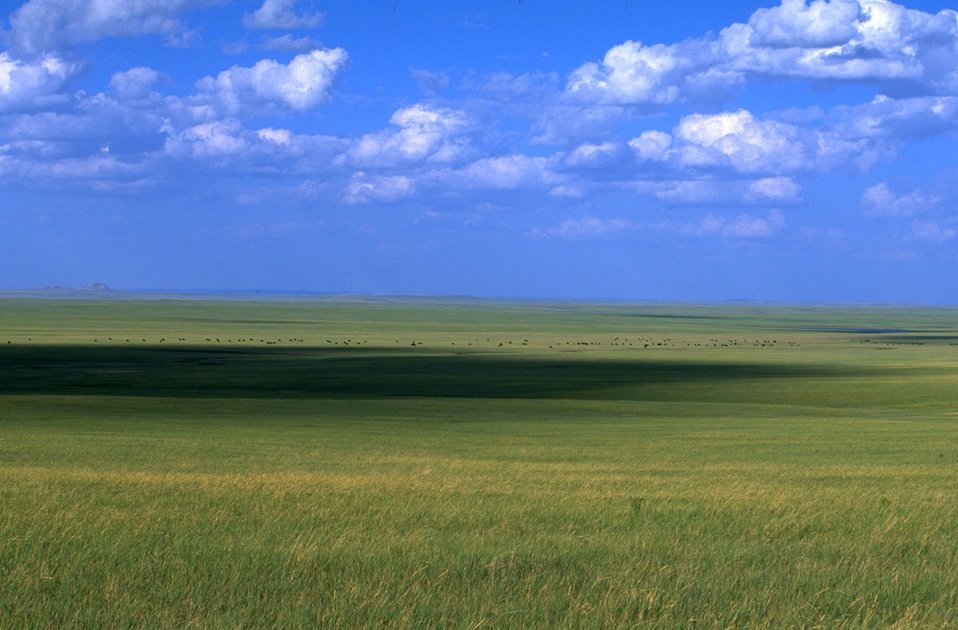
Grassland Vista 35 miles north of Belle Fourche